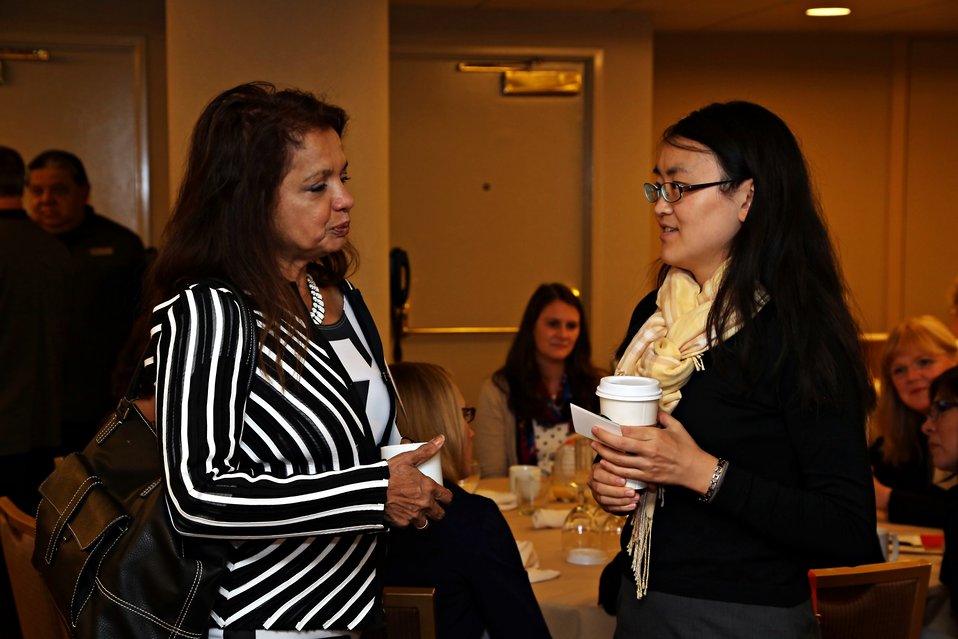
Women in Solar Breakfast 6